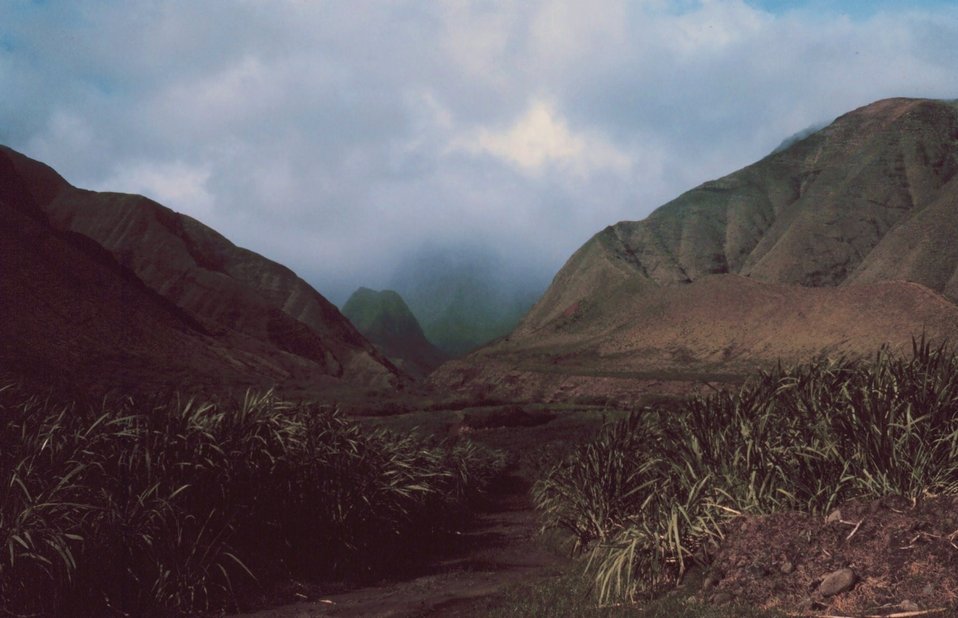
Pali